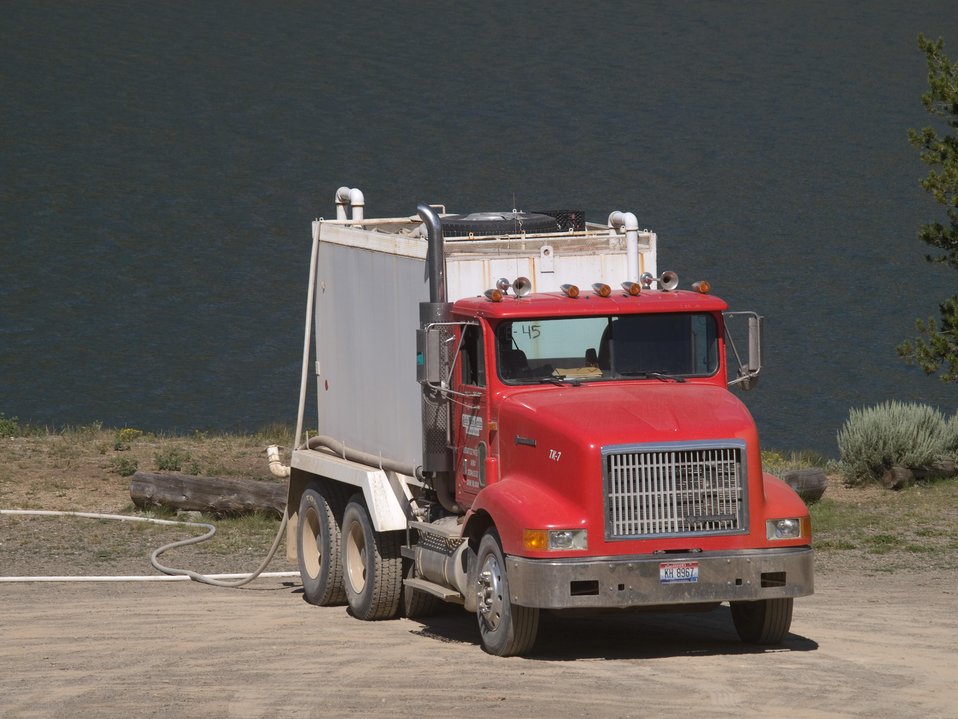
Water truck refills at Mosquito Flat Reservoir on Jul. 28, 2013. The Lodgepole Fire in the Salmon-Challis National Forest near Challis, ID began on Jul. 20, 2013 by lightning has consumed approximately 20,080 acres and is approximately 15% contained.